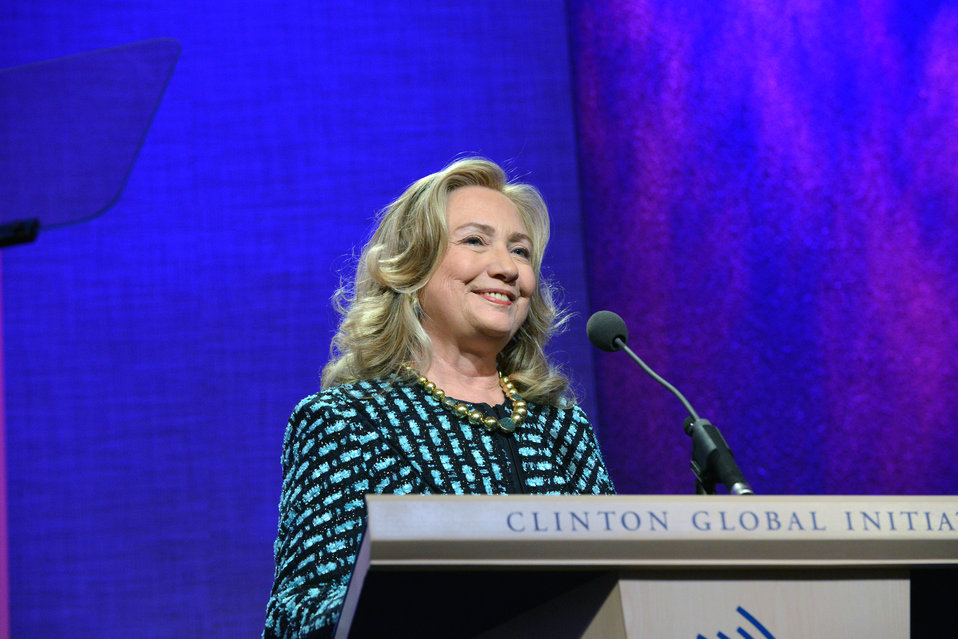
Secretary Clinton Delivers Remarks at the Clinton Global Initiative

U.S. Secretary of State Hillary Rodham Clinton delivers remarks at the Clinton Global Initiative in New York, New York on September 24, 2012.